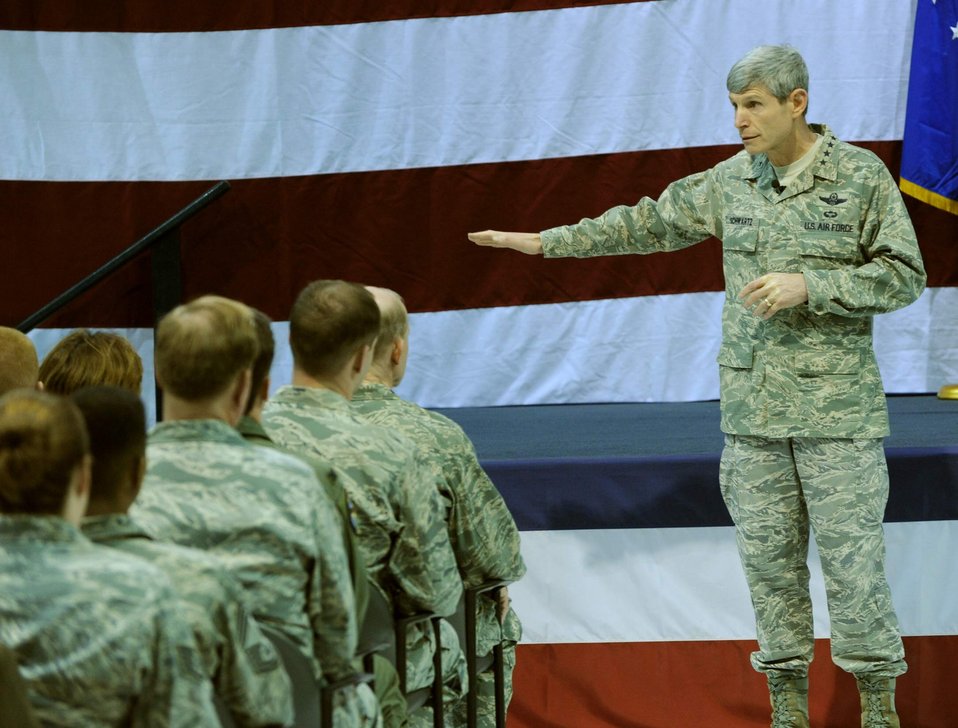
Gen. Schwartz to Airmen: 'We are a family'

General Norton Schwartz speaks to Airmen during an Airmen's Call March 11 at Langley Air Force Base, Va. General Schwartz, the Air Force chief of staff, reviewed Langley AFB's warfighting capabilities and viewed an F-22 Raptor demonstration during his visit.